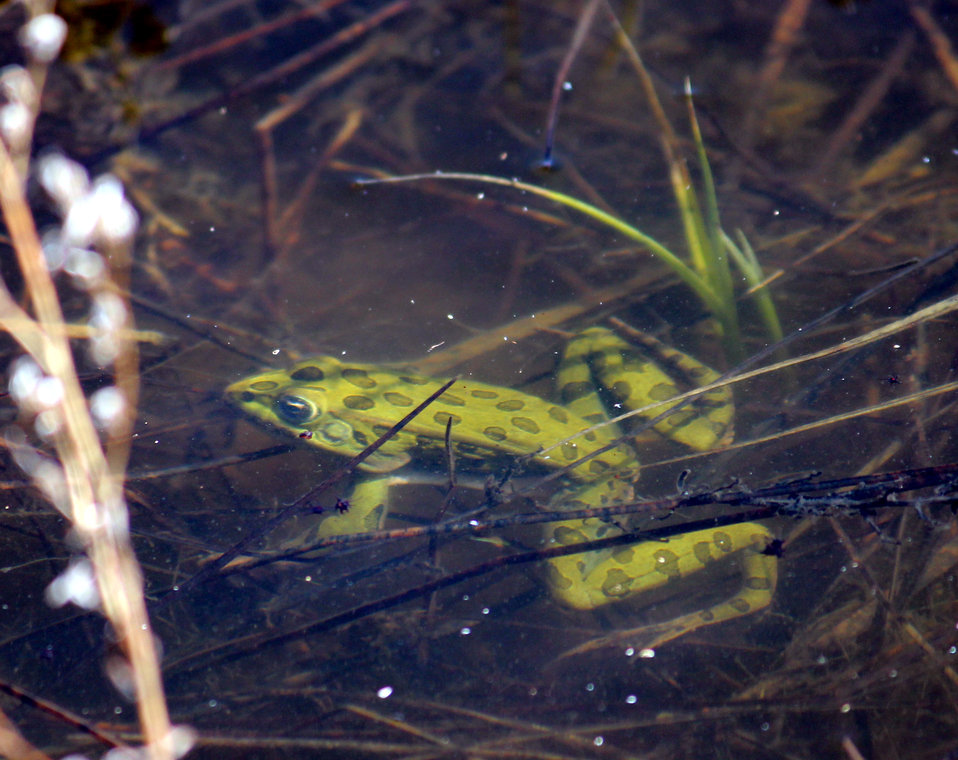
Northern Leopard Frog

This leopard frog sits motionless under the water on North Brinkman WPA in Logan County, North Dakota. Leopard frogs are common food for Great Blue herons and egrets.